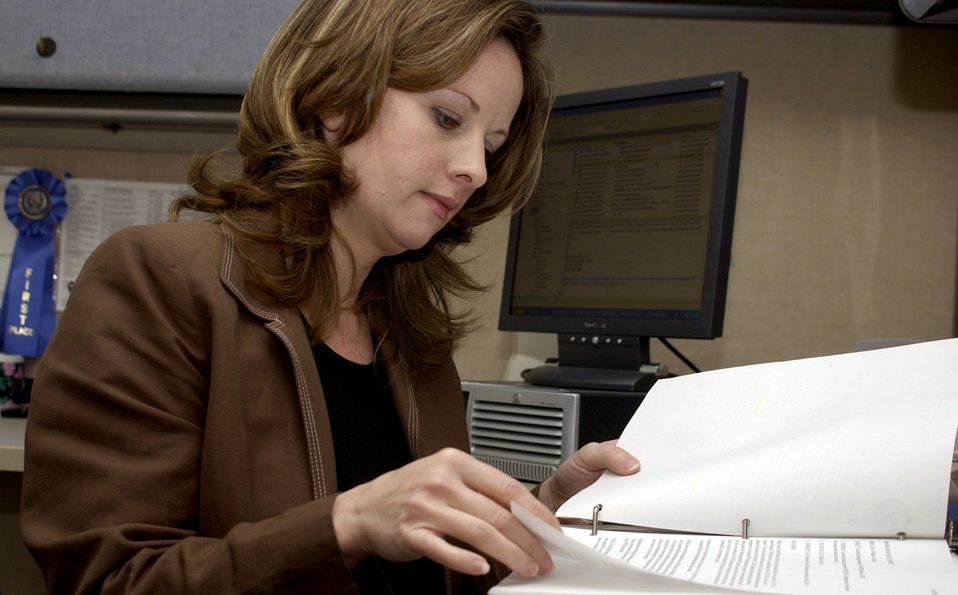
PME helps civilians

KEESLER AIR FORCE BASE, Miss. (AFPN) -- Kimberly Dunaway is one of many civilians to complete Squadron Officer School at Maxwell Air Force Base, Ala. She was able to apply SOS credit toward her master's degree. She is the acting faculty development chief for 2nd Air Force here.